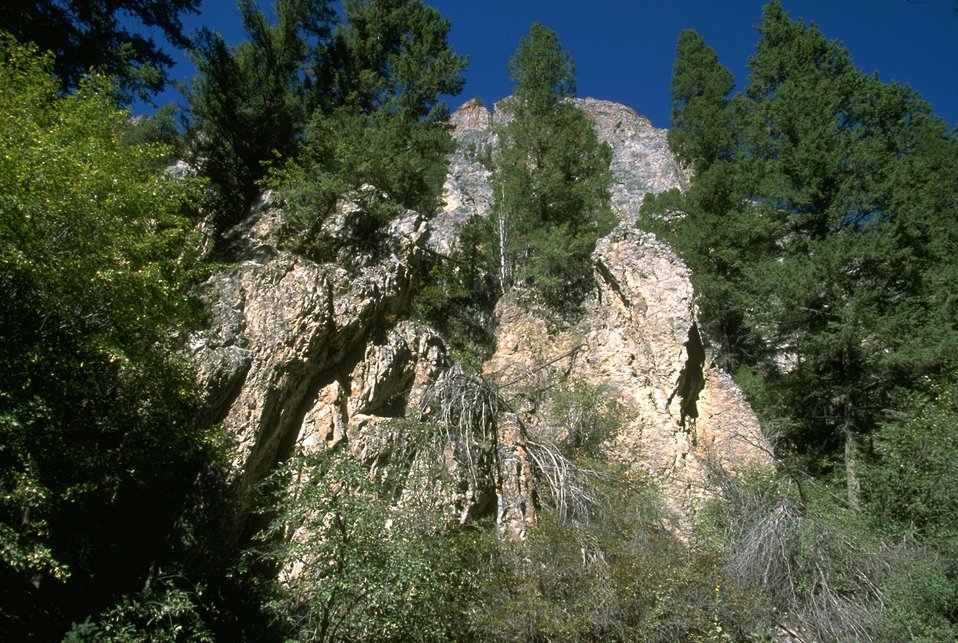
Rattler Gulch-Limestone Cliffs ACEC